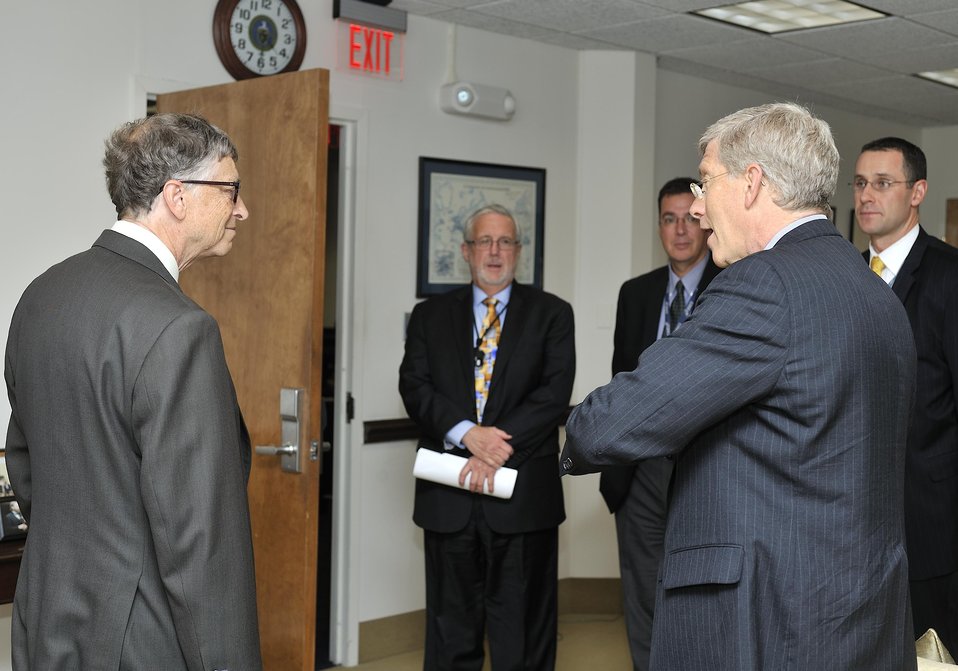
Ken Shipp/DOE Photo